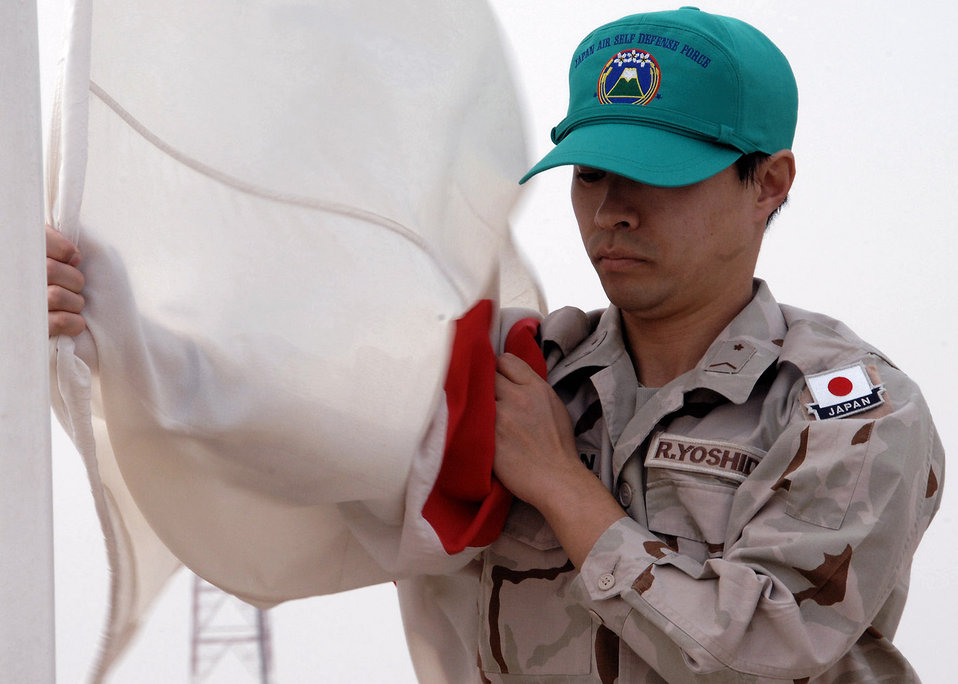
JASDF Redeplyoyment Group bids final farewell

Japanese Staff Sgt. Ryu Yoshida, Japanese Air Self Defense Force redeployment group, grasps the Japanese flag as it is lowered for the last time at an air base in Southwest Asia Feb. 10. Lowering the flag represents the end of the JASDF's Iraq Reconstruction Support Airlift Wing Mission.